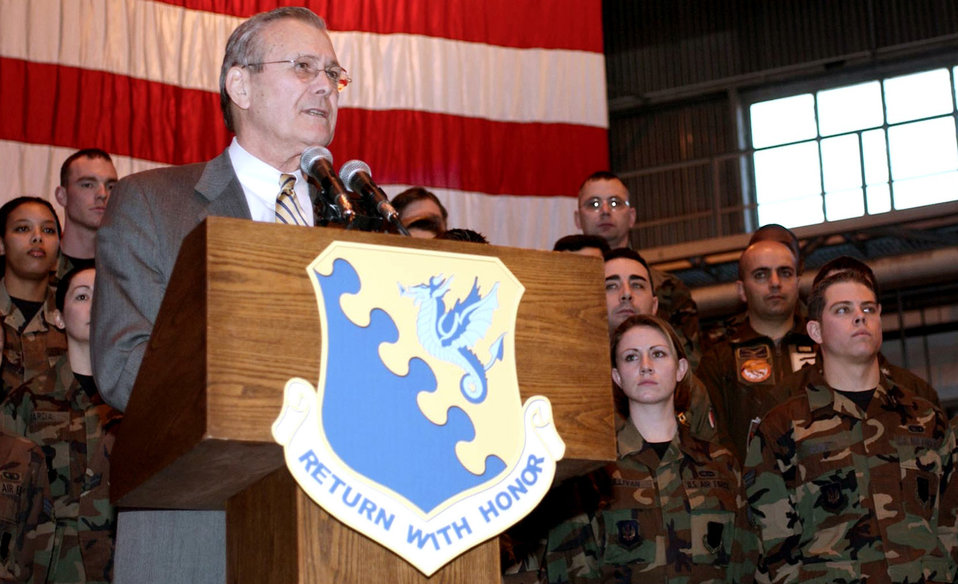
Secretary Rumsfeld visits base in Italy

AVIANO AIR BASE, Italy (AFPN) -- Secretary of Defense Donald Rumsfeld speaks with servicemembers during a town hall meeting Feb. 7 at Aviano Air Base, Italy. Rumsfeld visited the Air Force's only fighter wing south of the Alps for a few hours as part of a trip to gain European support for the global war on terrorism and future contingencies.